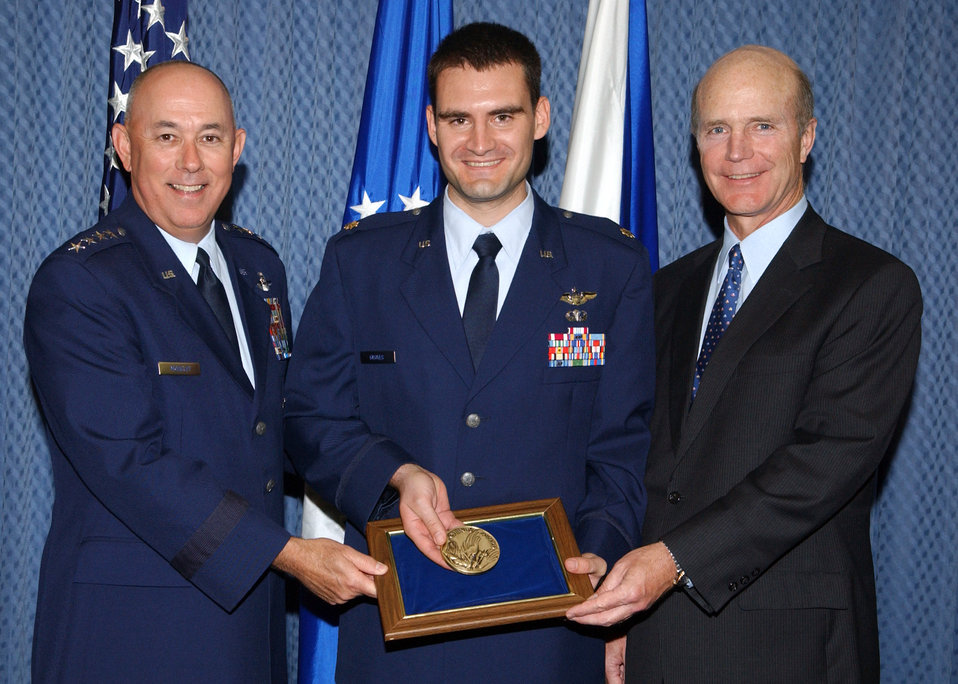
Major receives Cheney Award

WASHINGTON -- Maj. John Groves receives the Cheney Award from Acting Secretary of The Air Force Pete Geren and Chief of Staff of the Air Force T. Michael Moseley.